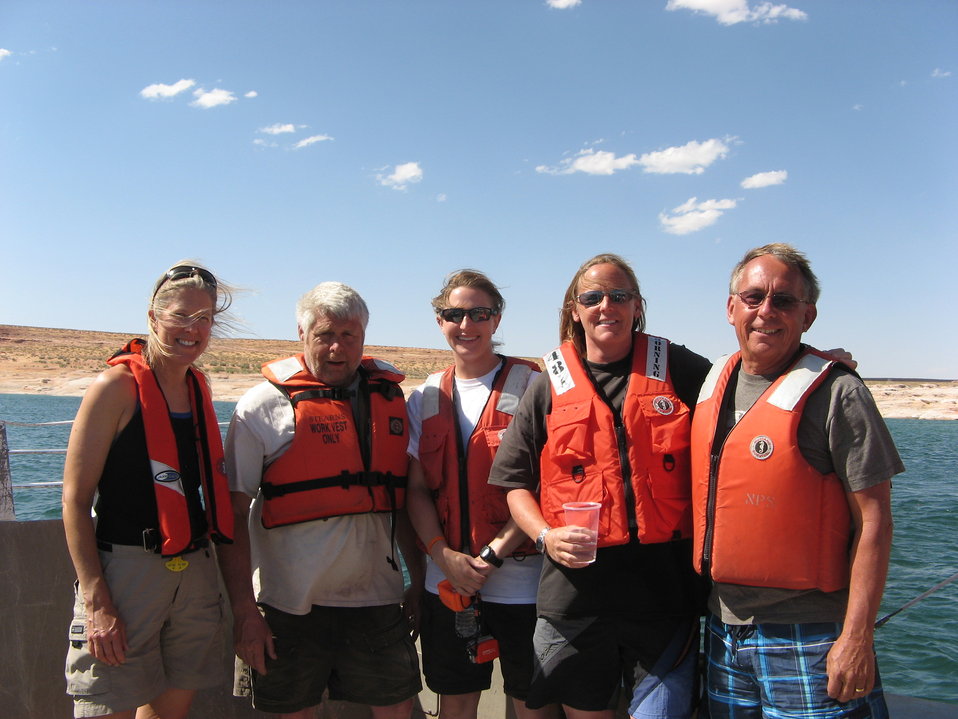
R6 Dive Team

FWS R6 Dive Team (L - R: Karen Nelson, Gar Holmes, Kim Martin, Deb Goeb, Larry Lockard) at Lake Powell, AZ.